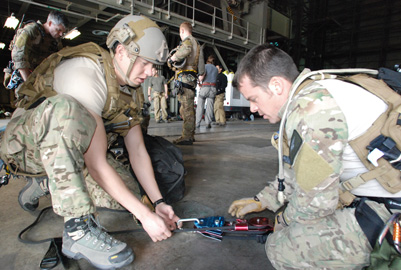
Rescue Airmen take on 'Titan' training

Pararescuemen Senior Airman Eric Humphrey (left) and Master Sgt. Joe Traska prepare their ropes and pulleys for rescue training Jan 20, 2011, at Cape Canaveral Air Force Station, Fla. The training is a high-angle, high-altitude and confined space rescue refresher for the PJs and combat rescue officers. Airman Humphrey and Sergeant Traska are with the Air Force Reserve Command’s 920th Rescue Wing.